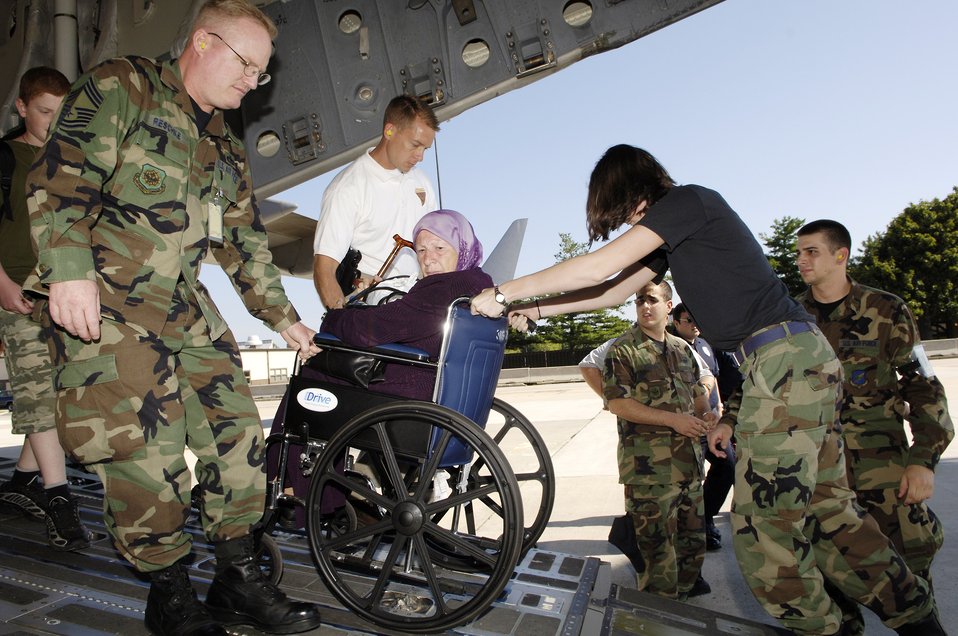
McGuire AFB provides humanitarian assistance

Members from the 305 Air Mobility Wing and New Jersey state police assist an American citizen from Lebanon off a C-17 Globemaster III on Monday, July 24, at McGuire Air Force Base, N.J. McGuire is providing humanitarian assistance for American citizens who are leaving Lebanon to return home after more than a week of fighting between the Israeli military and the militant group Hezbollah. More than an expected 1,000 Americans began arriving at McGuire on July 23.